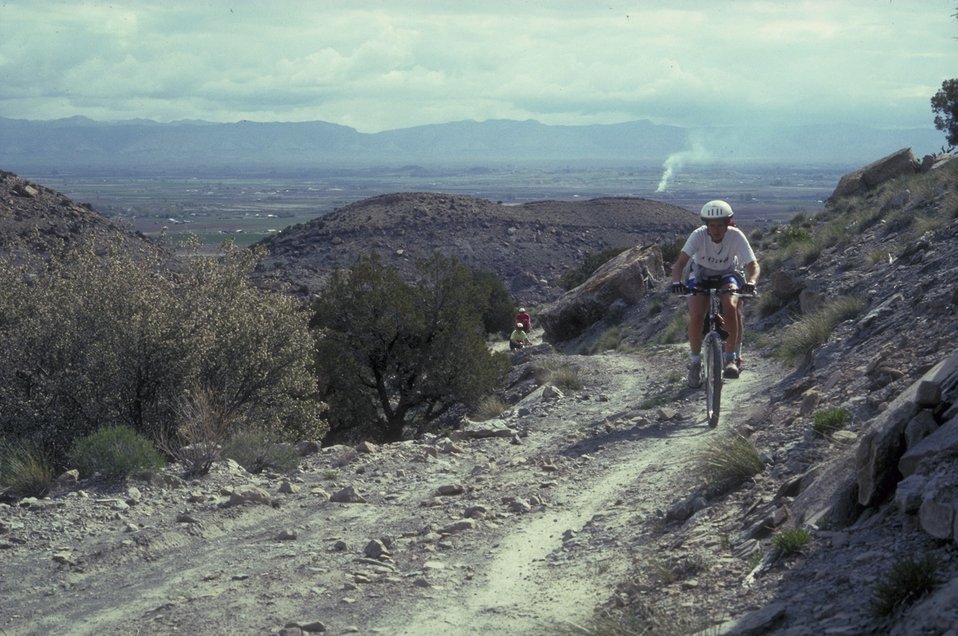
Mountain Biking the Kokopelli Trail.